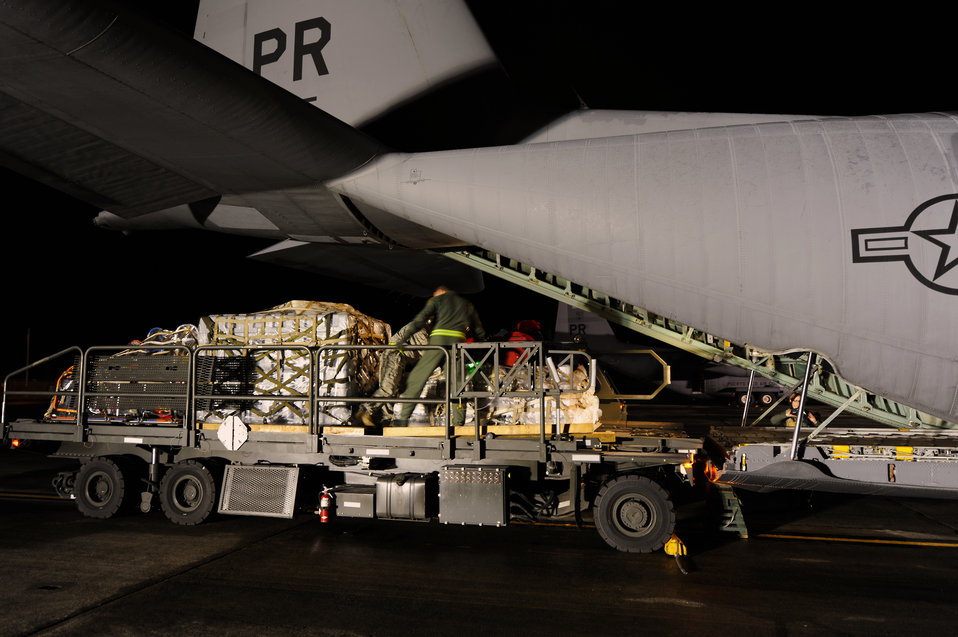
Puerto Rico ANG supports Haiti earthquake relief

Airmen from the Puerto Rico Air National Guard's 156th Airlift Wing load one of the unit's C-130E Hercules aircraft with search and rescue equipment that was bound for Haiti along with a team of Puerto Rican search and rescue workers Jan. 16 at Munoz Air National Guard Base, P.R. In the first week after the earthquake devastated the island nation of Haiti, the 156 AW transported more than 117 tons of cargo and 294 passengers and evacuated 70 United States citizens.